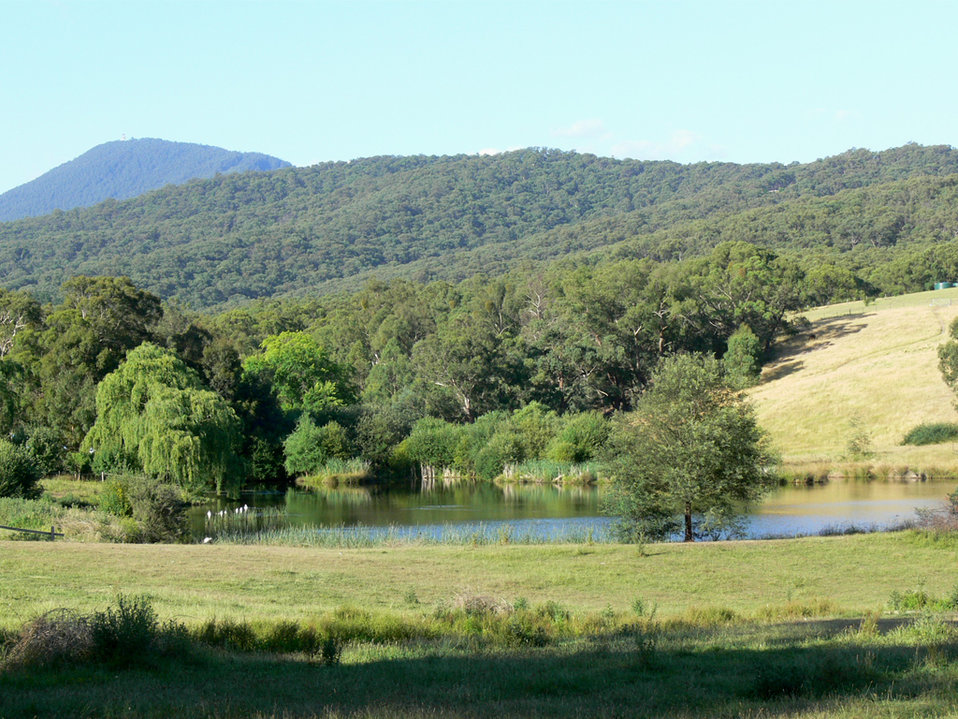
Photo of Yumbunga Lake in Chum Creek, taken on the 17th December 2007.